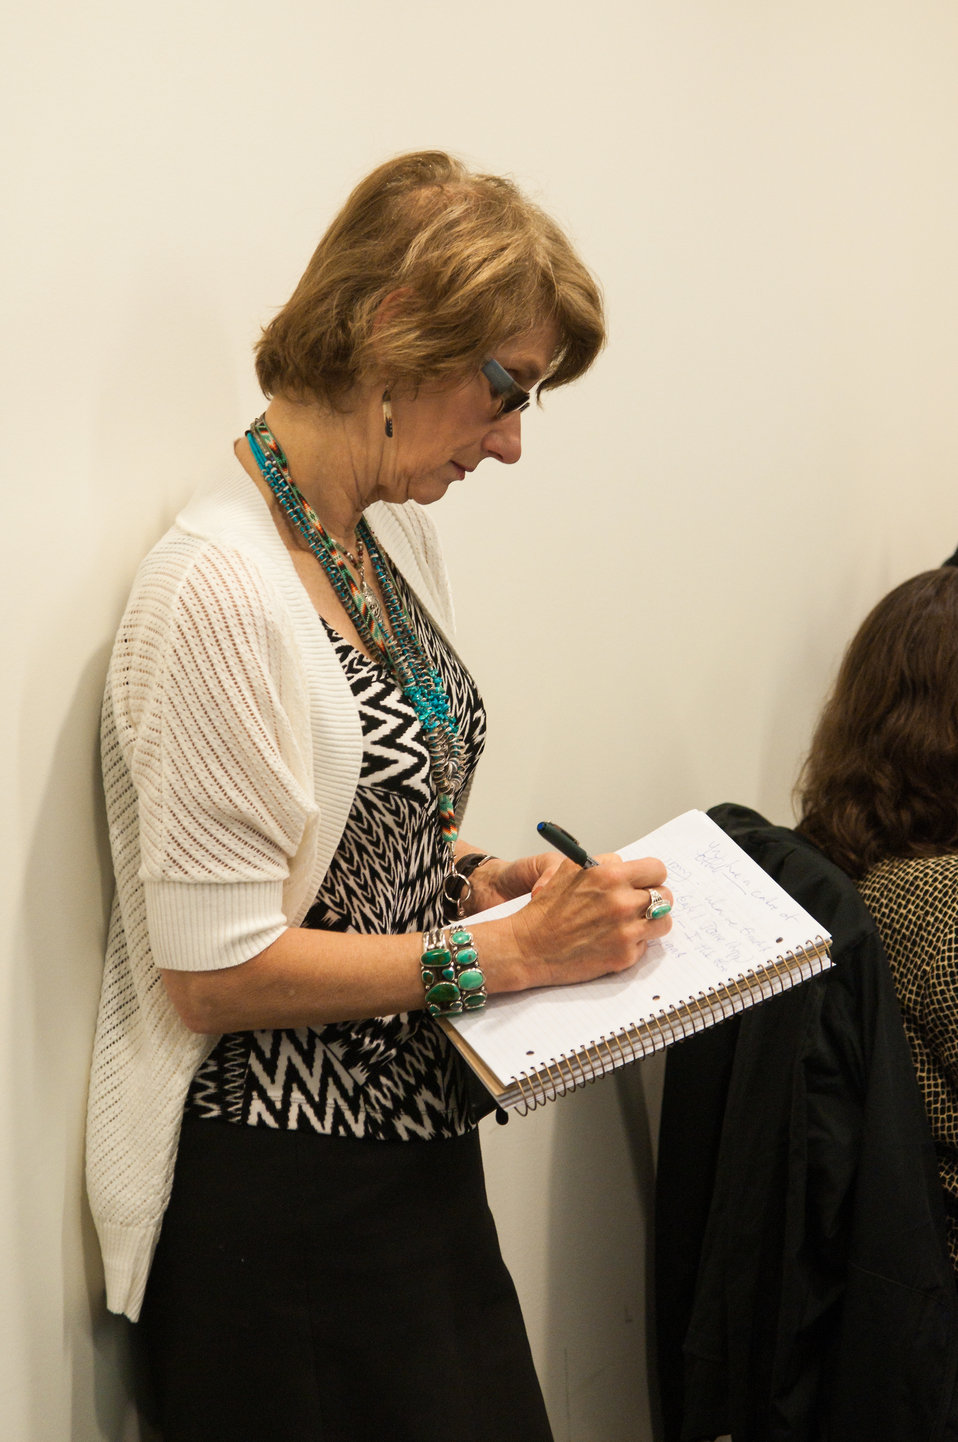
U.S. Department of Agriculture (USDA) Eastern Region 1994 Program Analyst and Interim USDA Tribal Land-Grant Liaison Stephanie Koziski takes notes during speaker discussions at the at the USDA 2013 Land-Grant Development Tribal Fellows Program held in Washington, D.C. on Monday, Jun. 03, 2013.